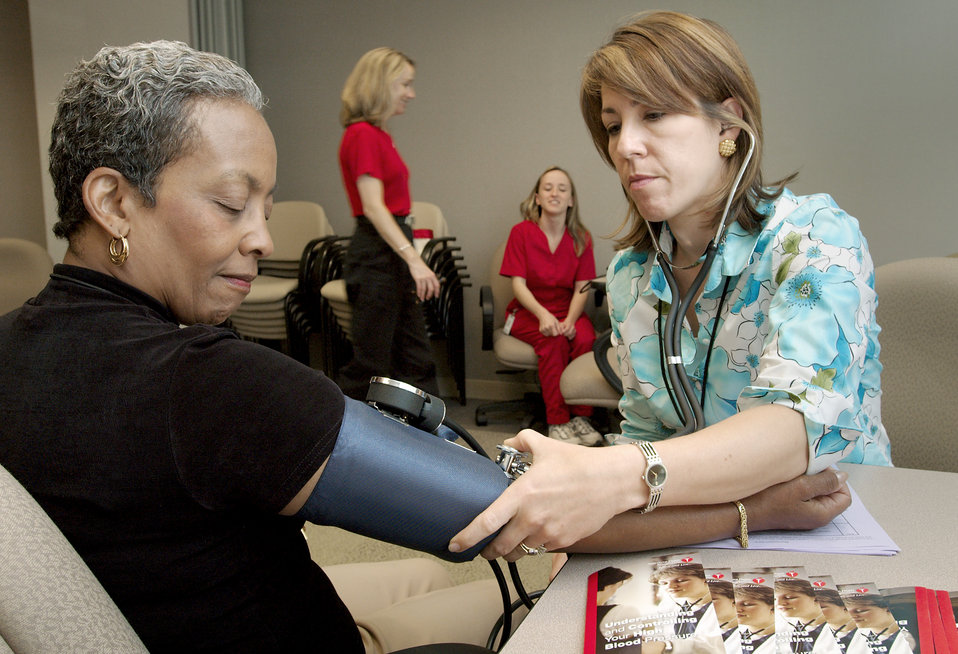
Connie Alfred (left), of the National Center for Infectious Diseases (NCID), was shown having her blood pressure taken by Robyn Morgan, of the National Center for Chronic Disease Prevention and Health Promotion (NCCDPHP), during a free blood pressure screening event that was held on all CDC campuses in 2005.High blood pressure, also known as hypertension, is known as a 'silent killer', because people who have the disease, often do not experience symptoms. Hypertension increases the risk for heart disease and stroke, which are leading causes of death in both women and men.